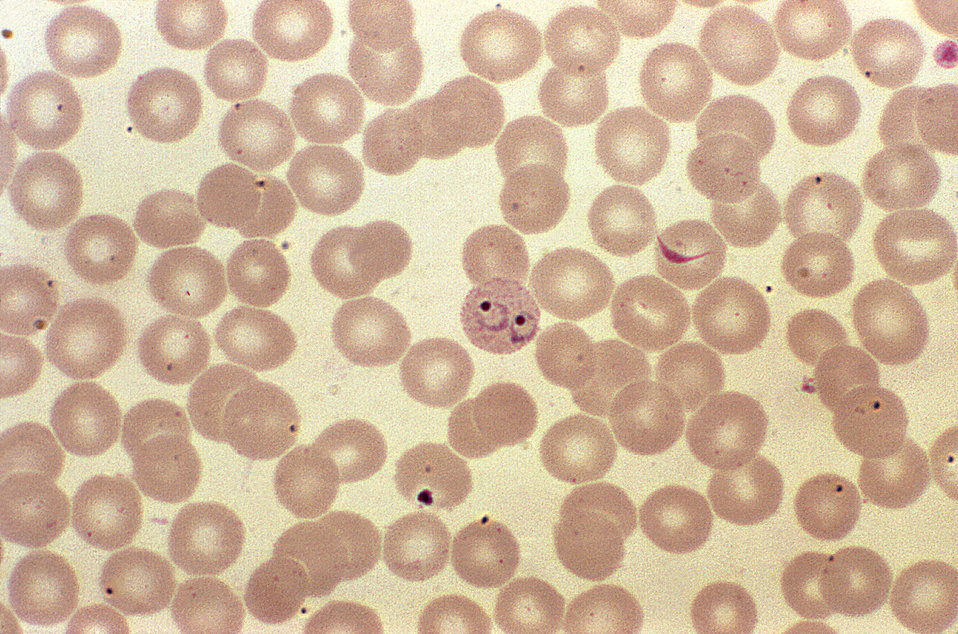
This photomicrograph reveals the presence of two P. vivax ring forms within a single infected RBC.